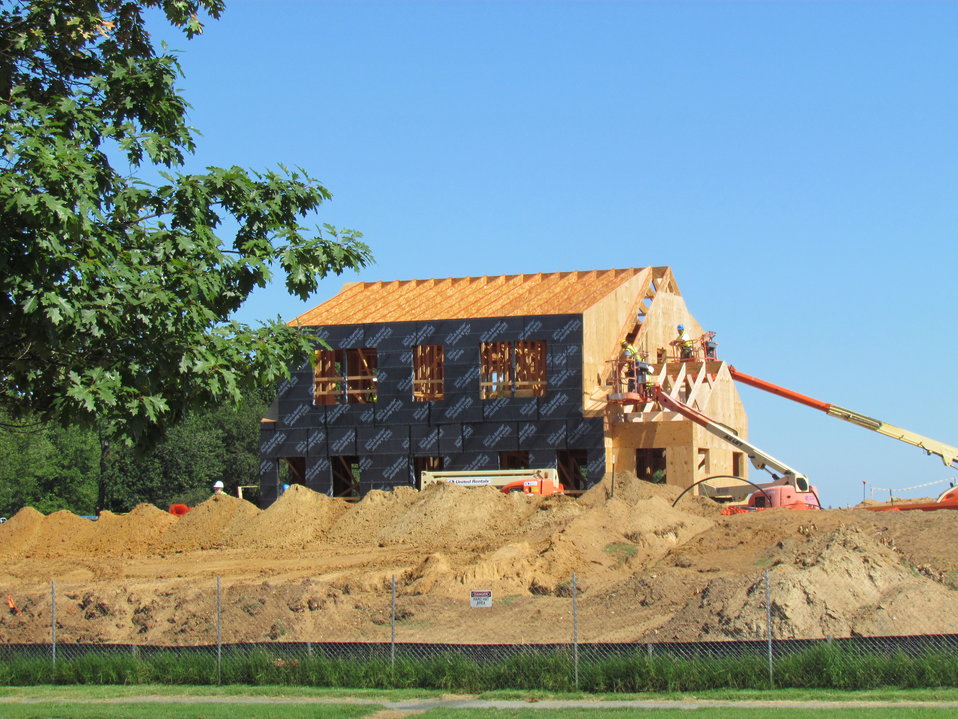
Net-Zero Energy Residential Test Facility - Installation of exterior plywood roof sheathing on lower roof on the east side of facility.